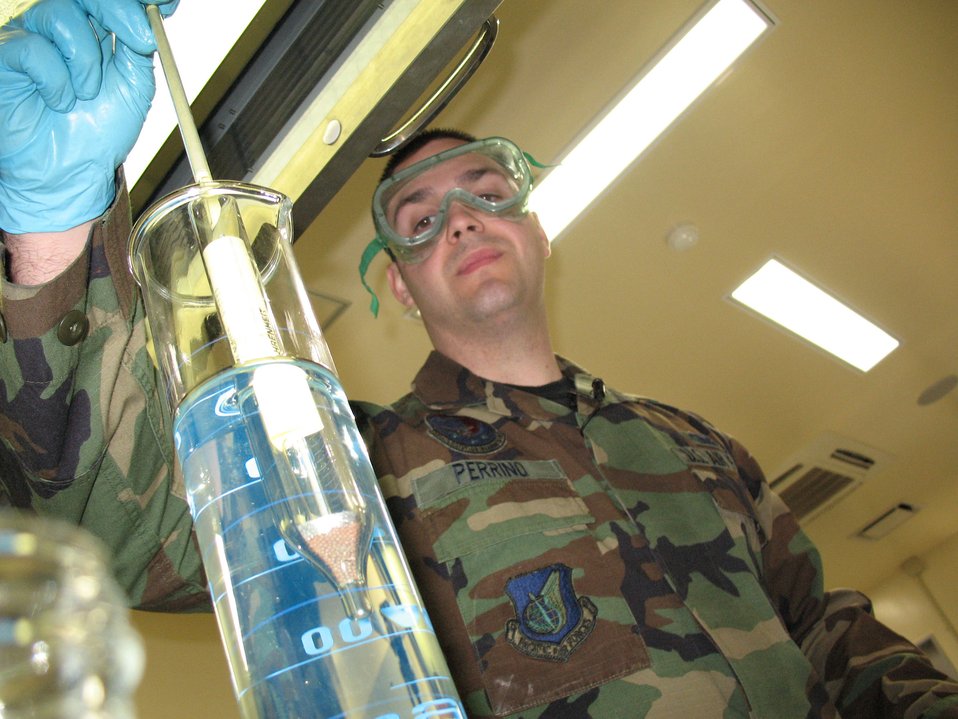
Fuel tests keep Misawa moving

Staff Sgt. Mike Perrino tests the weight of a fuel sample at Misawa Air Base, Japan. Loadmasters need to know the weight to help calculate the load and distance the plane can travel. Sergeant Perrino is the NCO in charge of the 35th Fighter Wing's Fuel Laboratory.